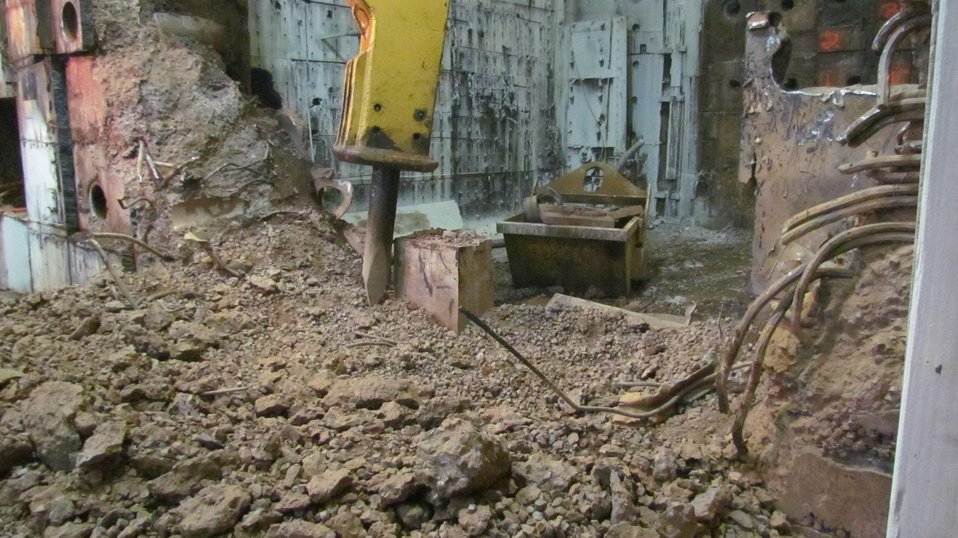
Brookhaven excavator

The Lab’s new excavator hammers concrete and steel off the Brookhaven Graphite Research Reactor Bioshield’s west wall.